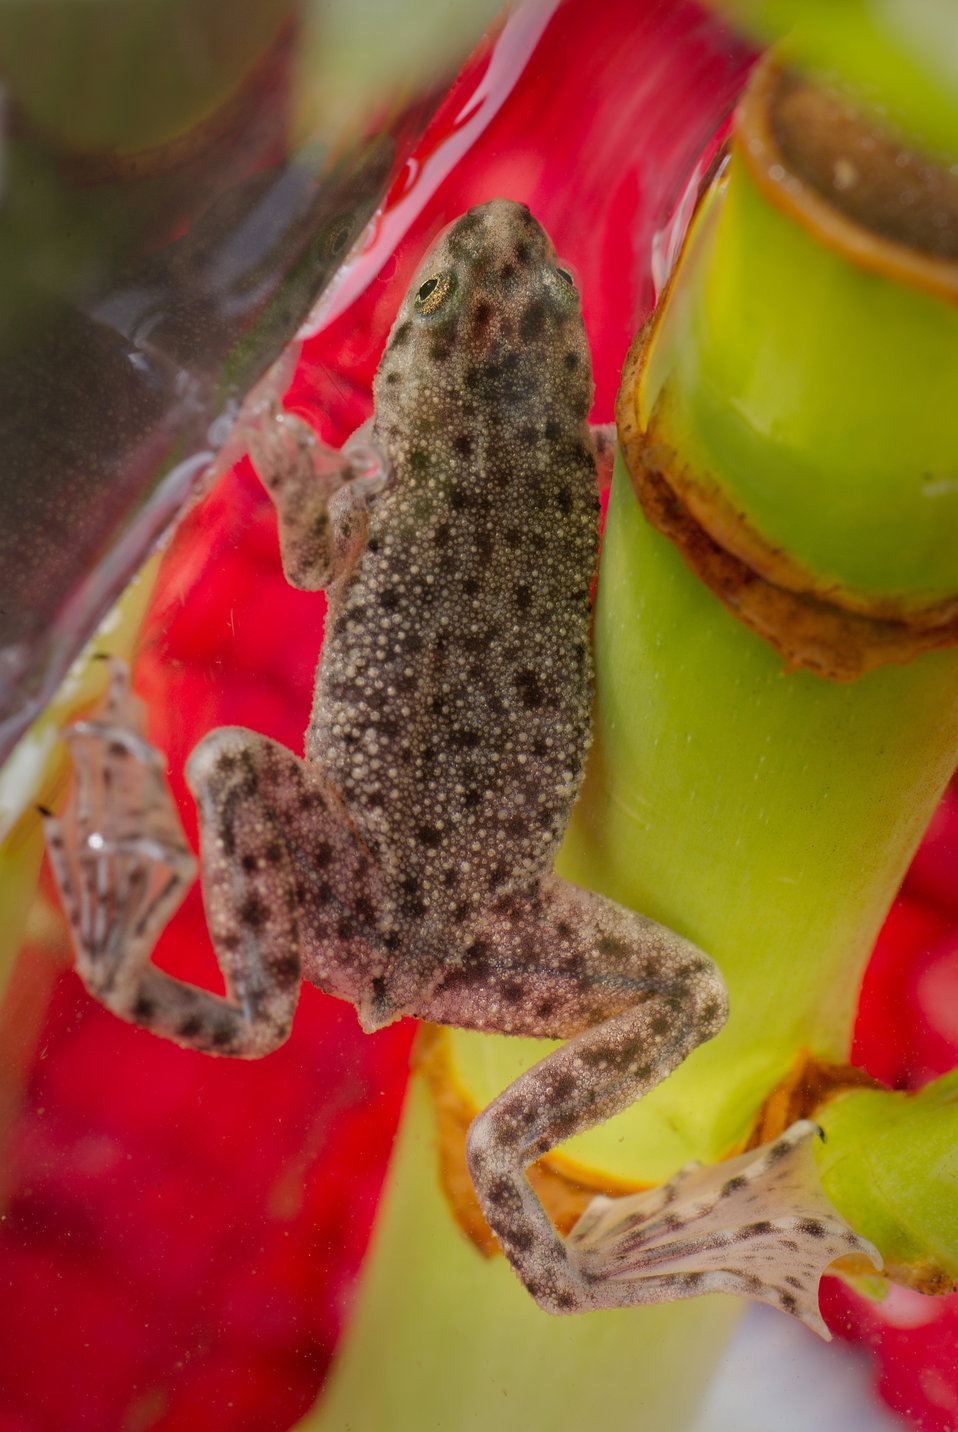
This photograph depicts an African dwarf frog, Hymenochirus boettgeri.